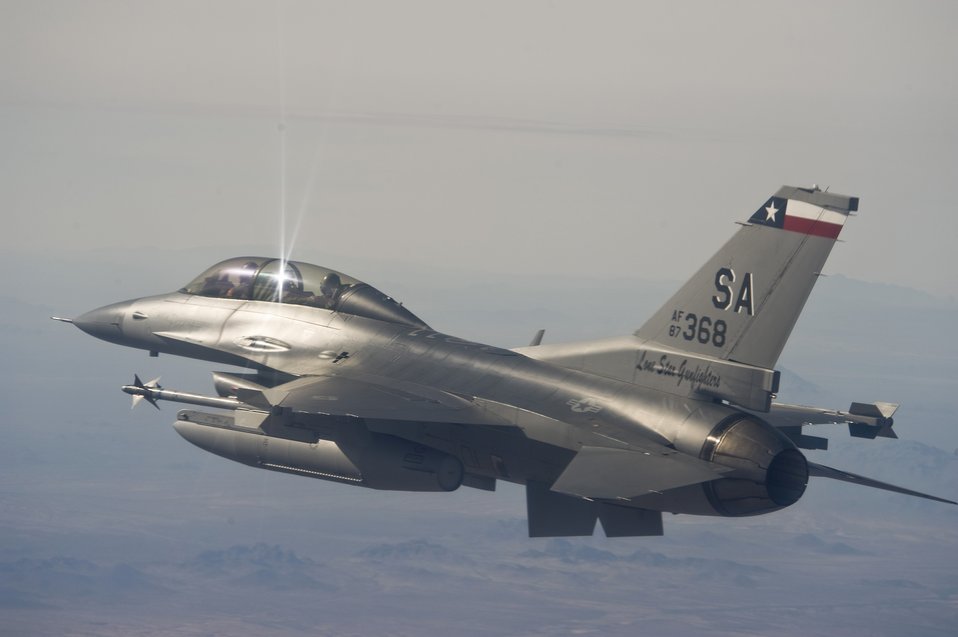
Airmen train next generation

An instructor pilot with the Texas Air National Guard’s 149th Fighter Wing returns to base after completing an Exercise Coronet Cactus training mission April 24 near Tucson, Ariz. The 149th Fighter Wing trains active duty F-16 pilots prior to assignment to their first duty station.